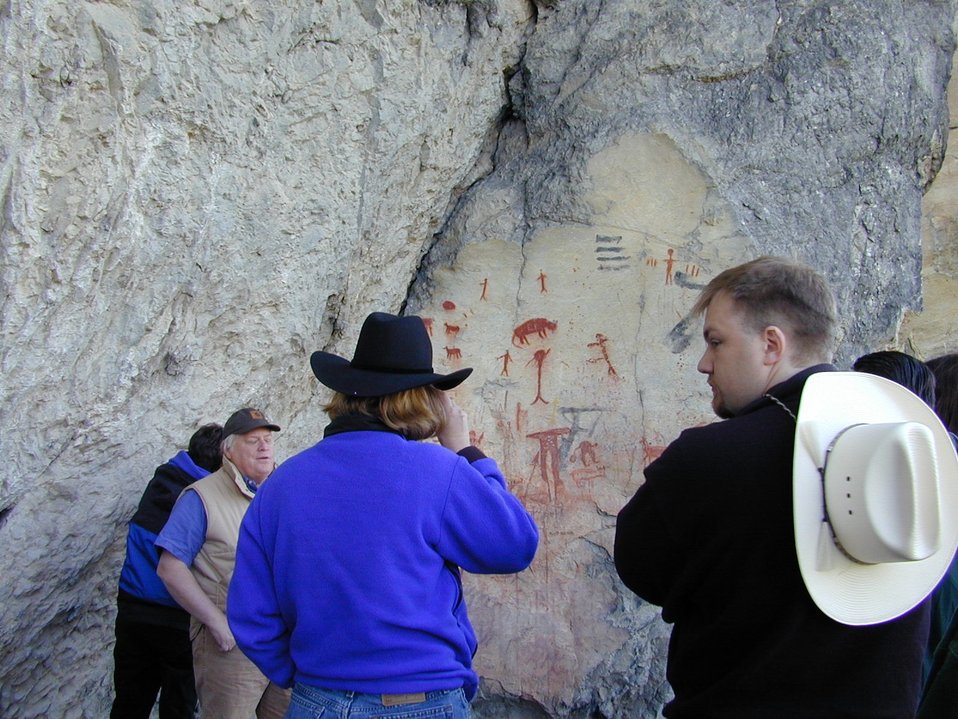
Birch Creek Valley Idaho Falls Field Office USRD Upper Snake River District